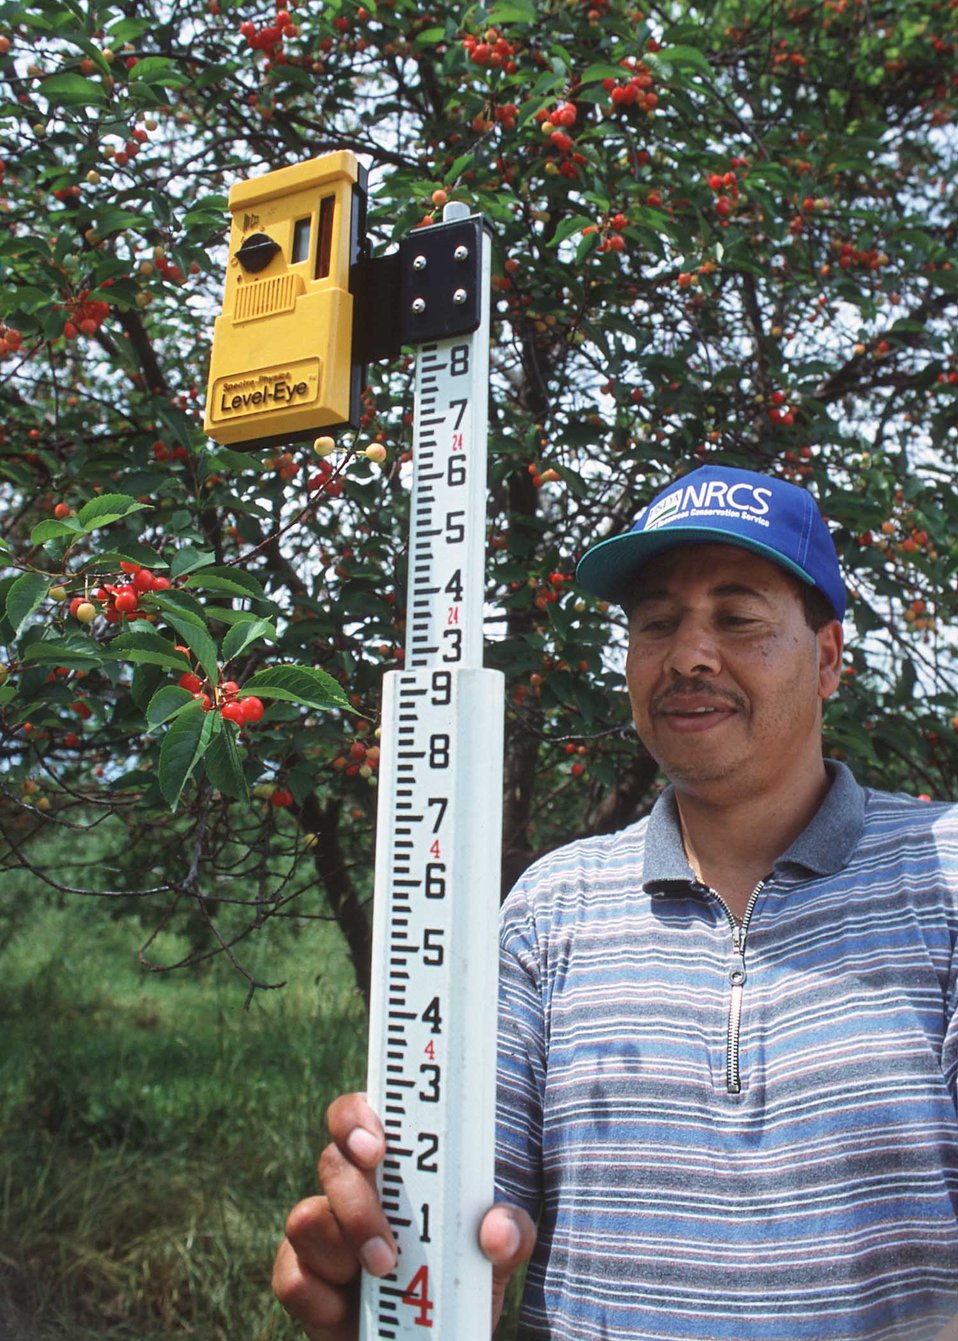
Resource Conservationist Bruce Green conducts a survey in an orchard. VanBuren County, Michigan.